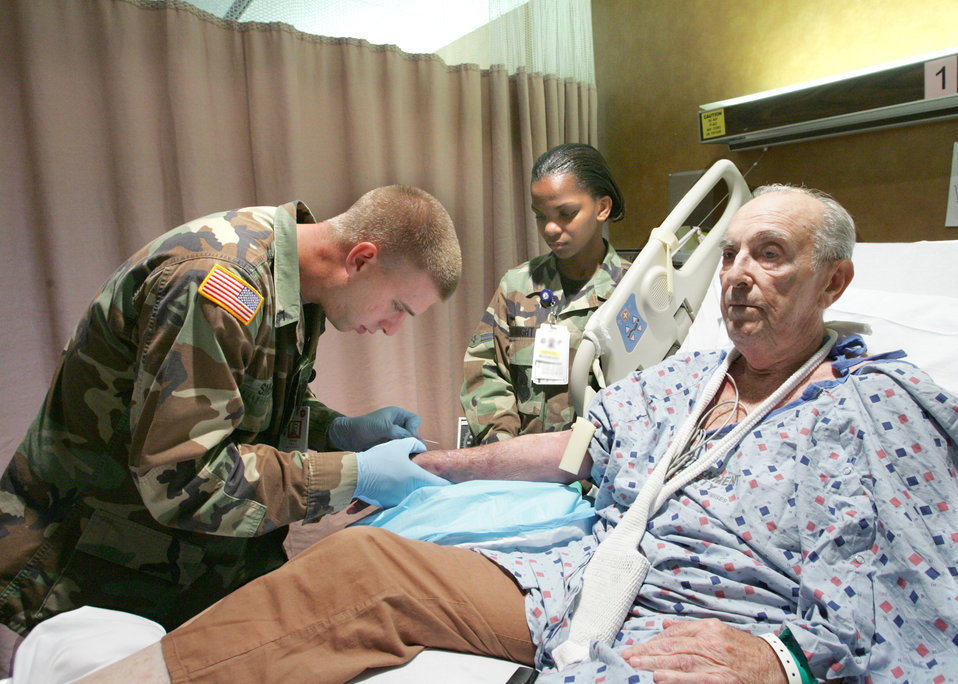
Practice makes perfect

Airman 1st Class Keoshia Bright oversees Army Private 2nd Class Paul Smead as he inserts an intravenous catheter into retired Chief Master Sgt. Joshua Ruderman's arm Sept. 27 at Wilford Hall Medical Center, Lackland Air Force Base, Texas. Airman Bright is with the 750th Medical Operations Squadron. Private Smead is training at Wilford Hall to become a licensed vocational nurse.